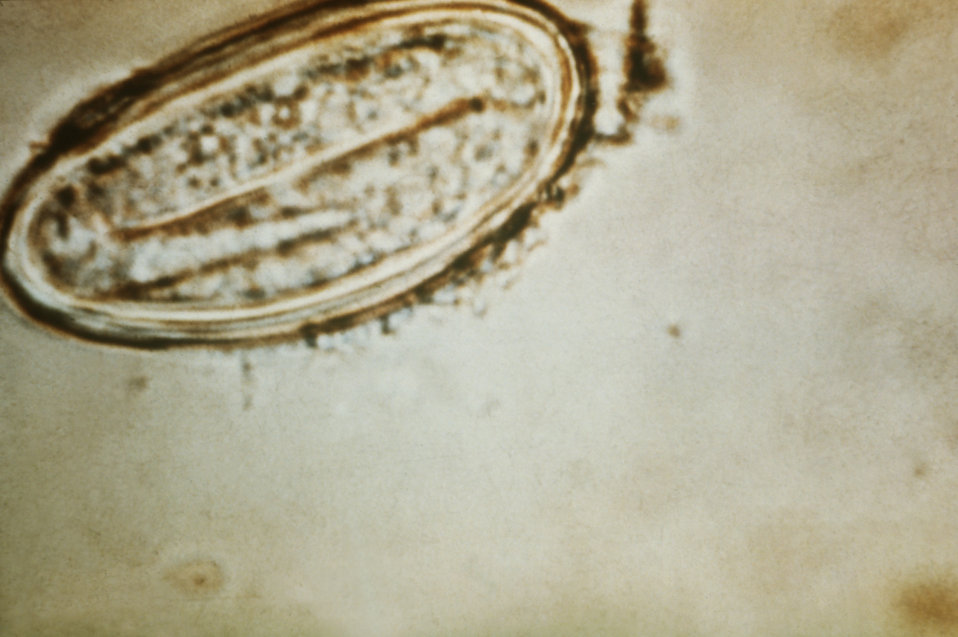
This micrograph reveals details of an Enterobius vermicularis egg, otherwise known as the ''human pinworm''.